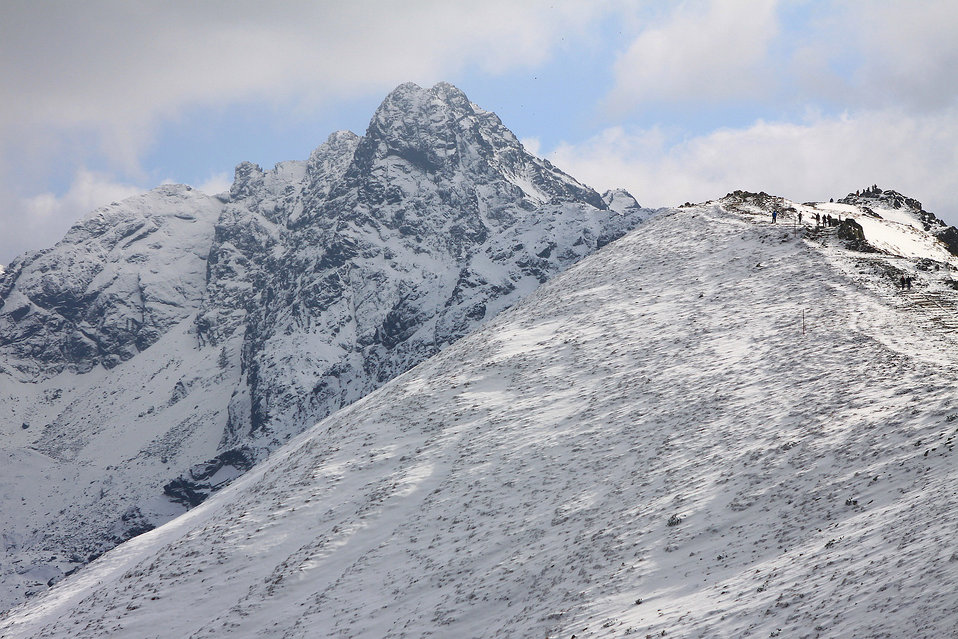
Mt. swinica

In tatra mountains.